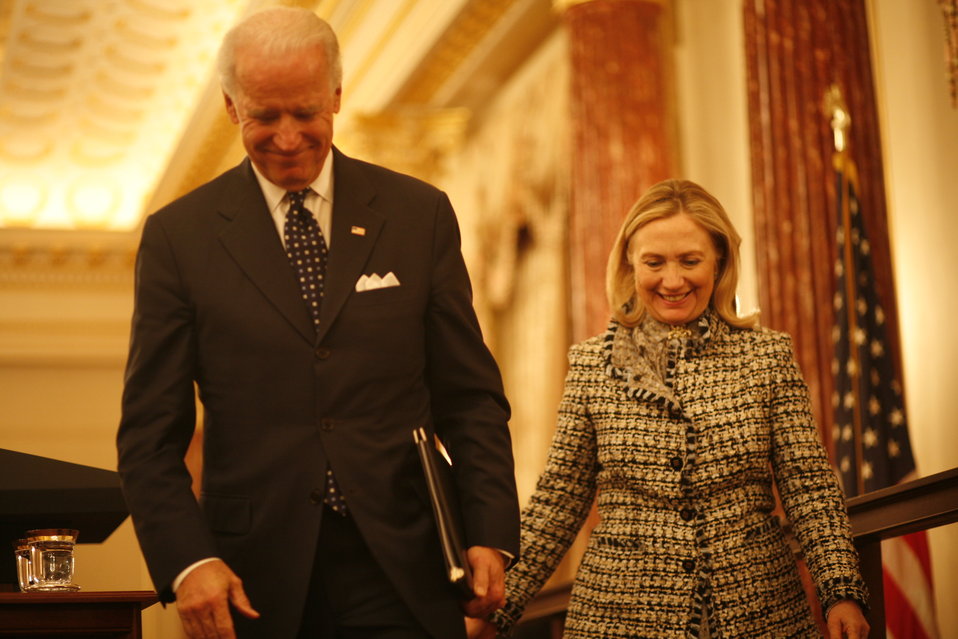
Vice President Biden and Secretary Clinton Depart the Stage

U.S. Vice President Joseph Biden and U.S. Secretary of State Hillary Rodham Clinton depart the stage after delivering remarks at the first-ever State Department Global Business Conference at the U.S. Department of State in Washington, D.C., on February 21, 2012.